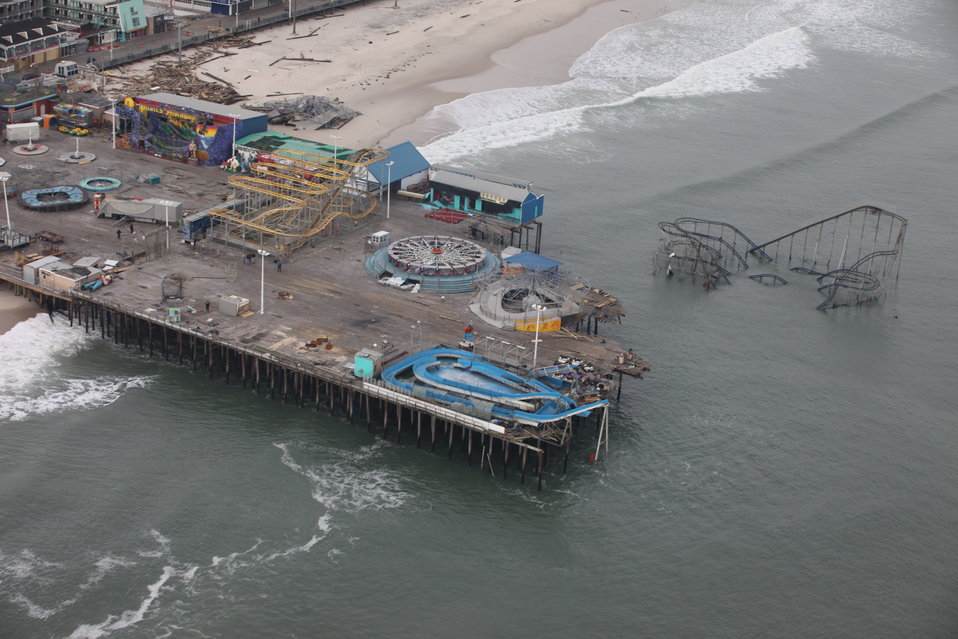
Damage to Casino Pier (NJ)

Aerial photo of Casino Pier amusement park in Seaside Heights after Hurricane Sandy.